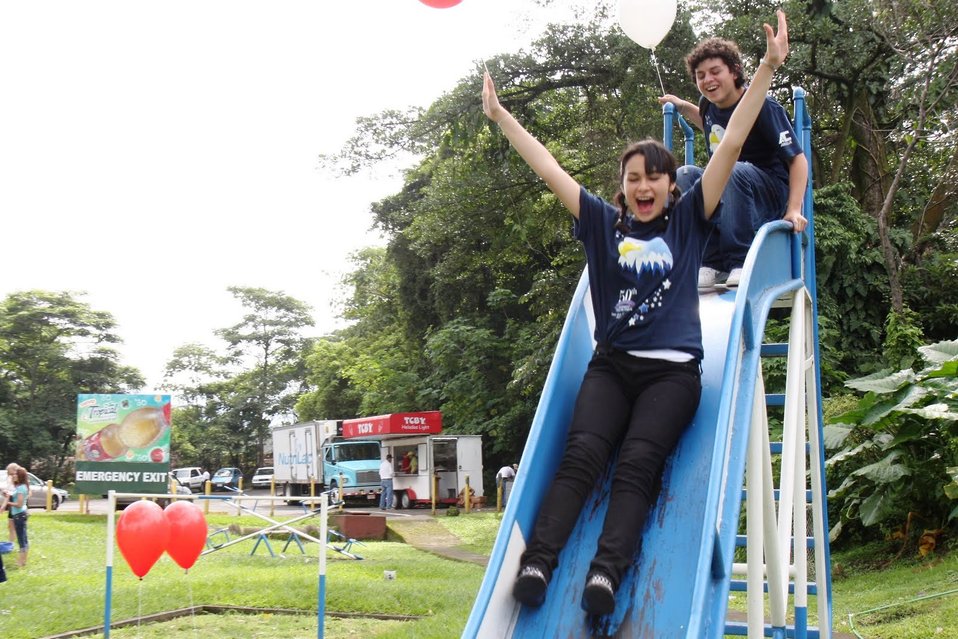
Students Play on the Playground

Students from U.S. Embassy San Jose in Costa Rica's English Access Microscholarship Program play on the playground during the U.S. Independence Day celebration on July 2, 2010, in San Jose, Costa Rica.